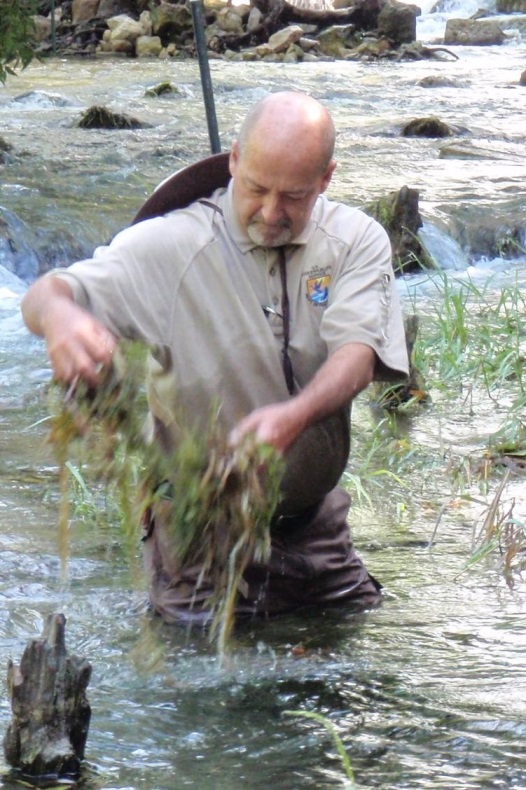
Tom Brandt-Southwest Region

Tom Brandt, Director of the Aquatic Resources Center in Texas, see here collecting wild rice on the San Marcos River, says seven years in the Army taught him to be prepared for whatever a day may bring, and working for the Service is constantly reinforcing this idea.